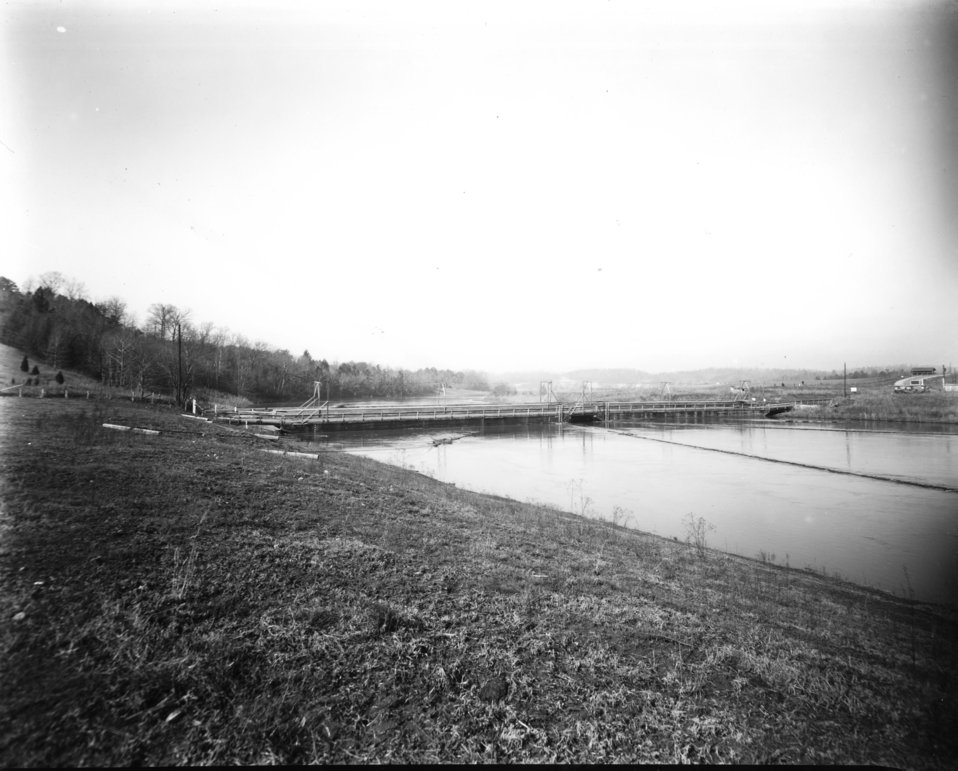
Recreation at Oak Ridge